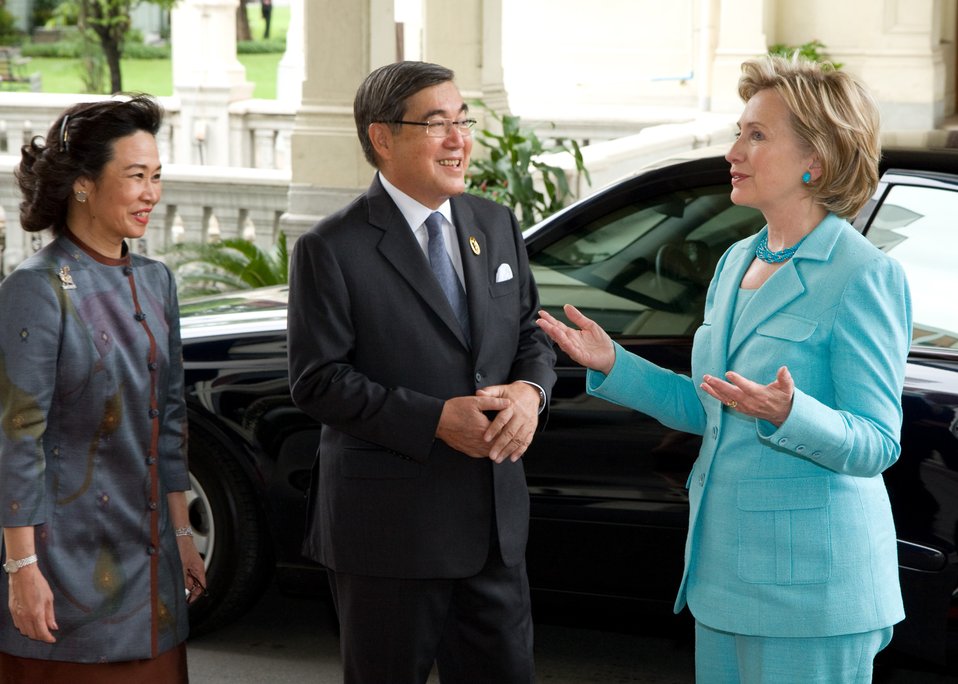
Secretary Clinton Visits Phyathai Palace

U.S. Secretary of State Hillary Rodham Clinton chats with Lieutenant General Supriya and Mrs. Mokkhavesa at Phyathai Palace in Bangkok, Thailand July 22, 2009.